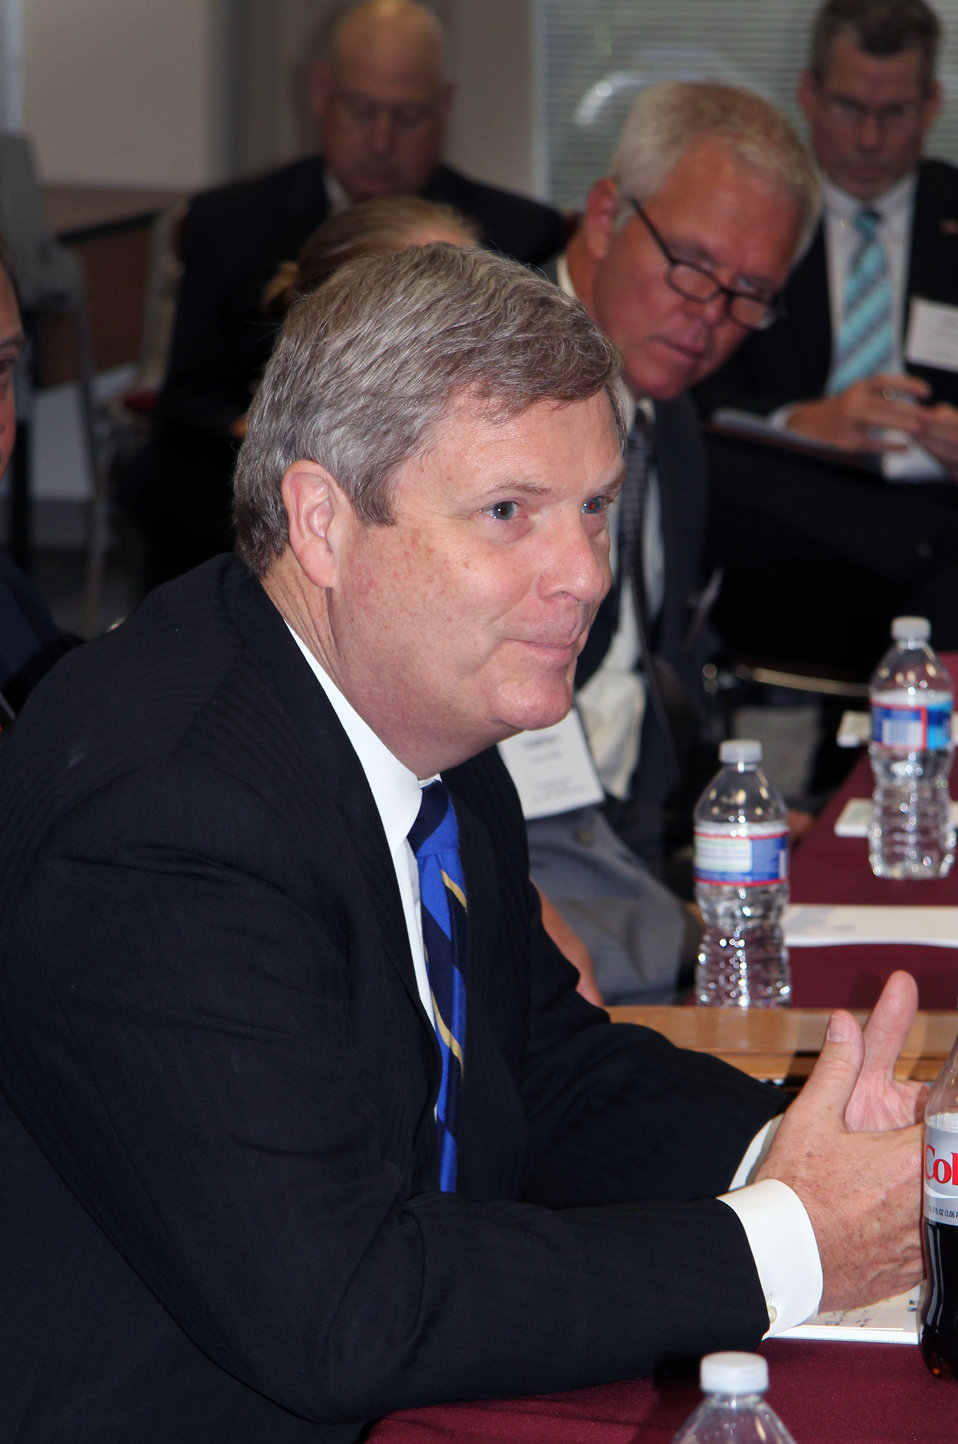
Agriculture Secretary Tom Vilsack attends a roundtable meeting with America's Farmers and Ranchers in Richmond, VA., on Wednesday, May 23, 2012.